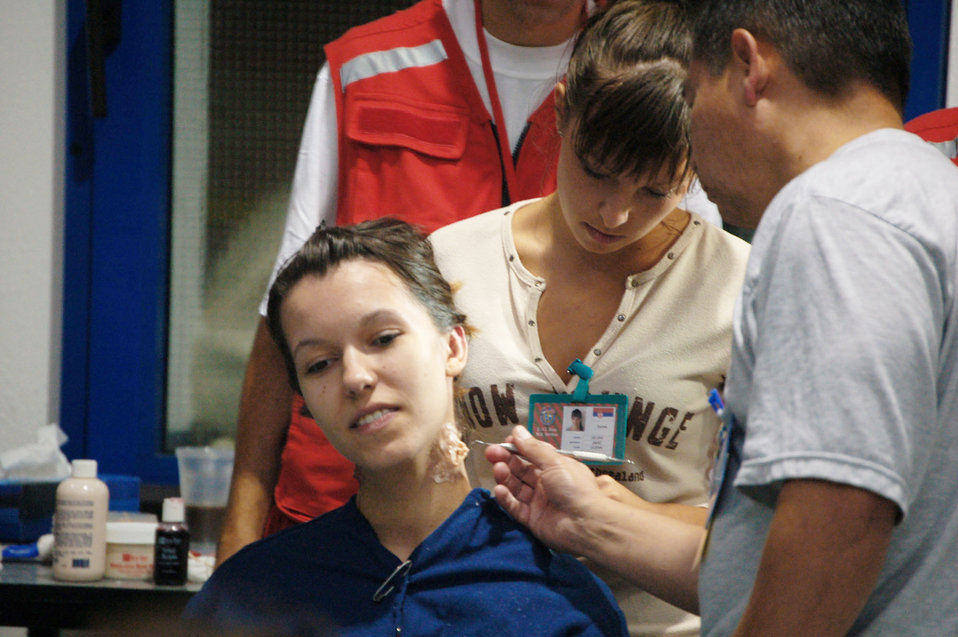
Airmen teach moulage to medical students

Marija Gocic tilts her head as Senior Master Sgt. Juan Gomez, 86th Medical Group from Ramstein Air Base, Germany, applies moulage to her neck. Ms. Gocic was one of 50 students from the school who participated as a mock patient during the live exercise portion of the military medical training exercise in Central and Eastern Europe, or MEDCEUR 2009 in Nis, Serbia. Ms. Gocic is a medical student at Dr. Milenko Hadzic Medical School here.